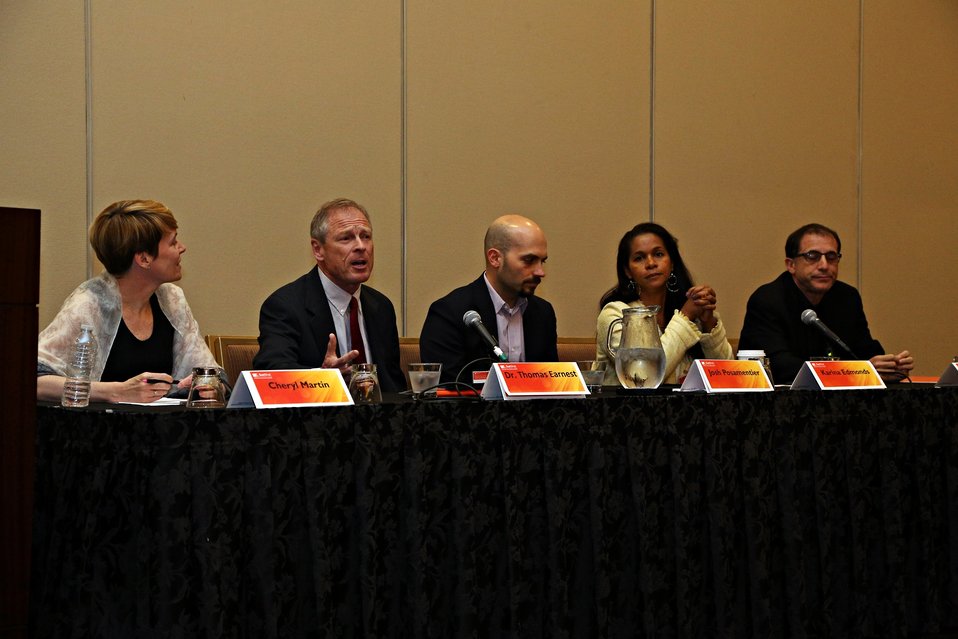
Breakout Sessions 1